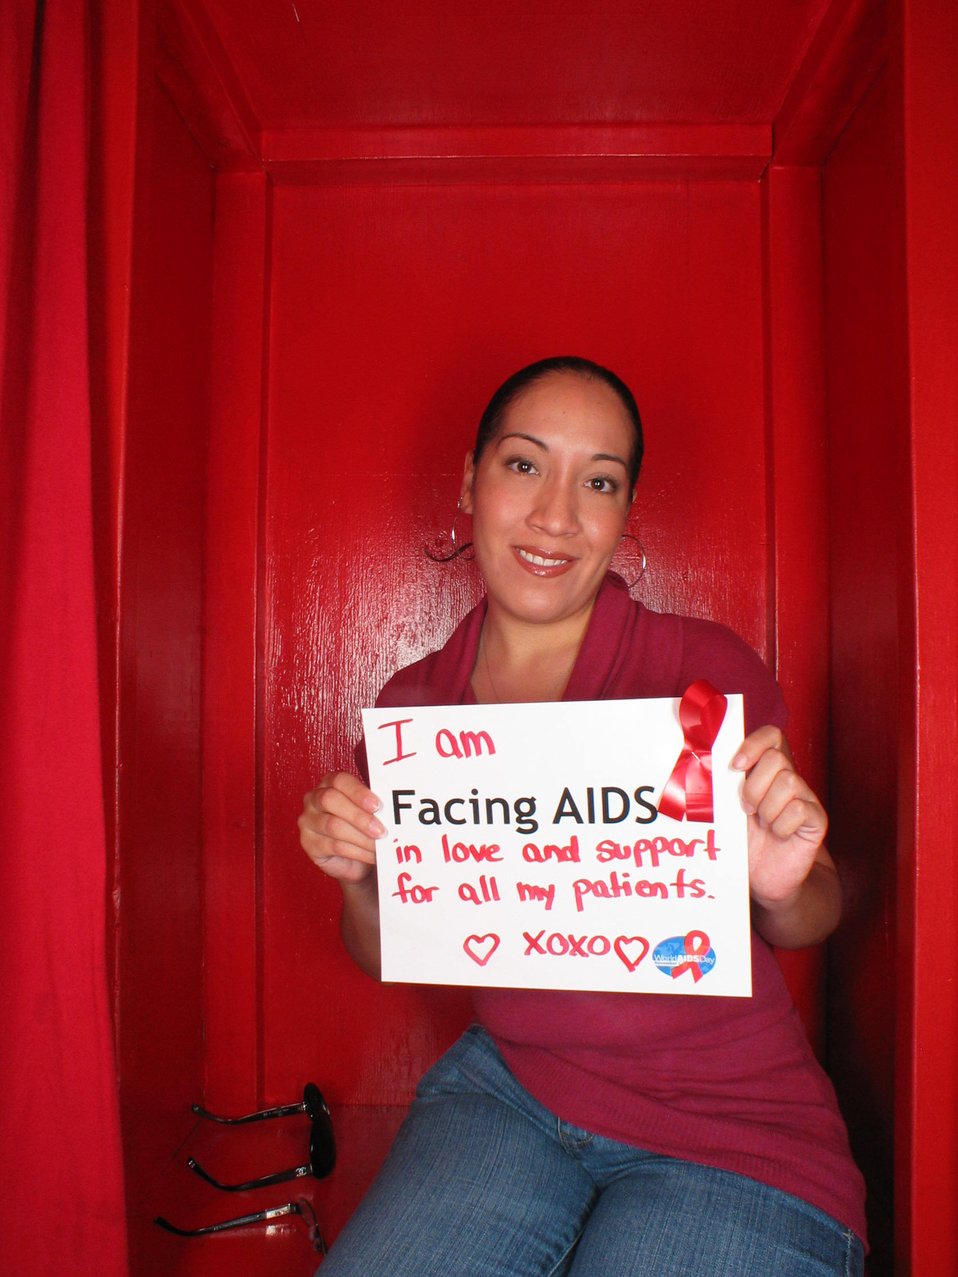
I am Facing AIDS in love and support of all my patients XOXO